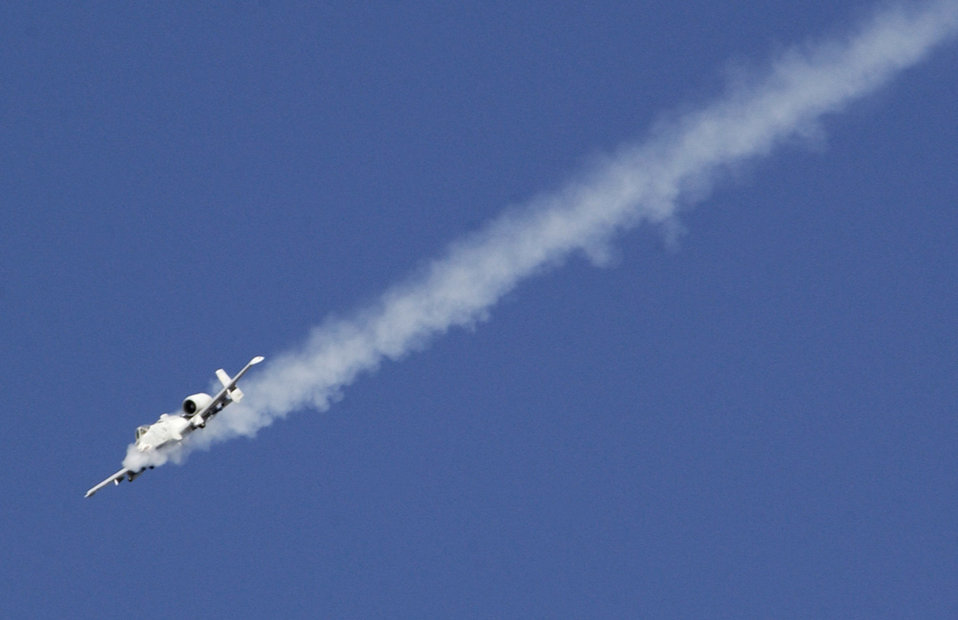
'Cyclone' over Iraq

KIRKUK, Iraq -- The pilot of an A-10 Thunderbolt II fires its cannon at a strategic target here Nov. 17 during Operation Ivy Cyclone. The operation is a combined-arms operation designed to root out and crush insurgents in Iraq. The aircraft is from the 74th Fighter Squadron at Pope Air Force Base, N.C.